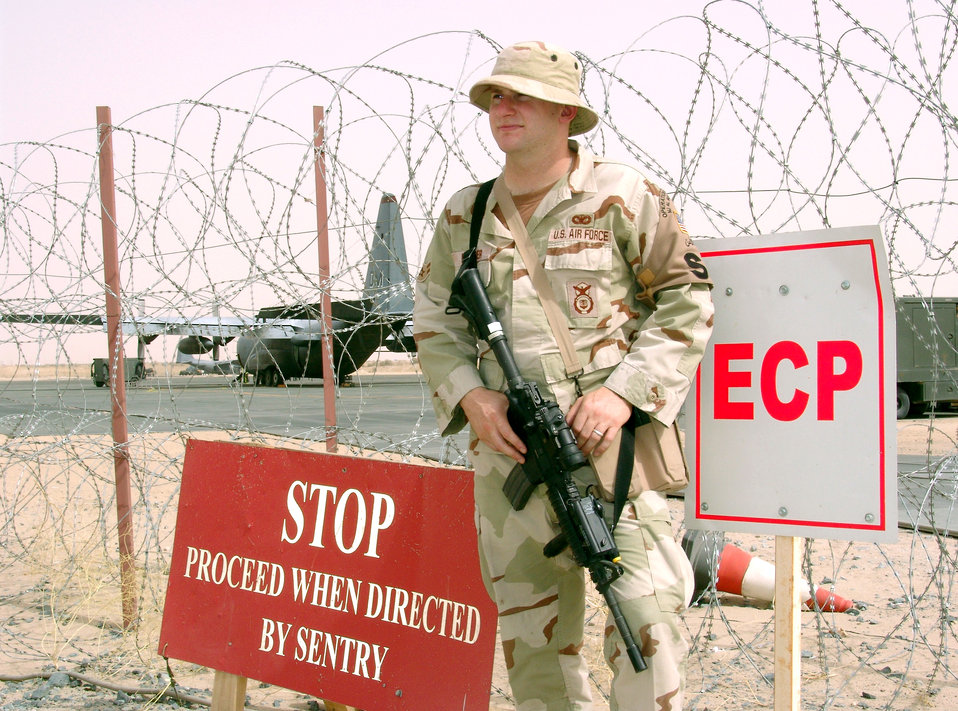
All secure

SOUTHWEST ASIA -- Airman 1st Class Matthew Krueger stands guard at a forward-deployed location. He is assigned to the 386th Expeditionary Security Forces Squadron and is deployed from Vandenberg Air Force Base, Calif.